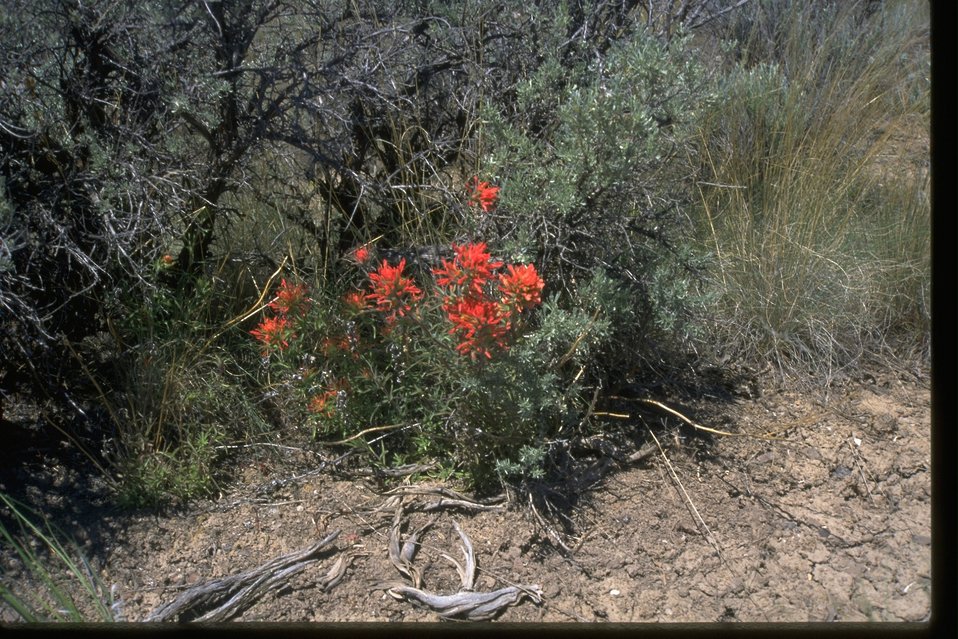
Wildflowers on Flagstaff Hill, near the NHOTIC.